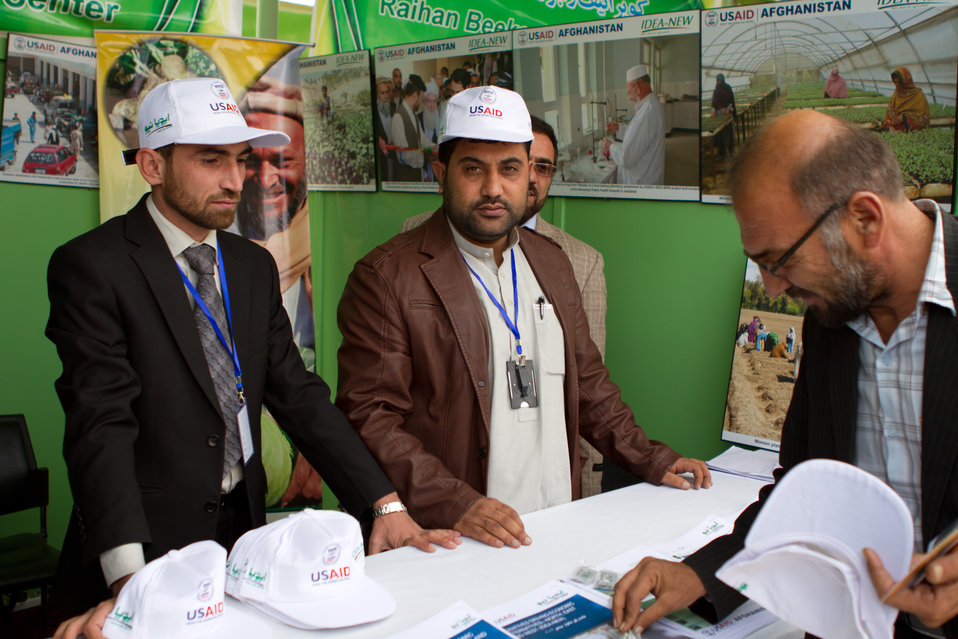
Agfair event